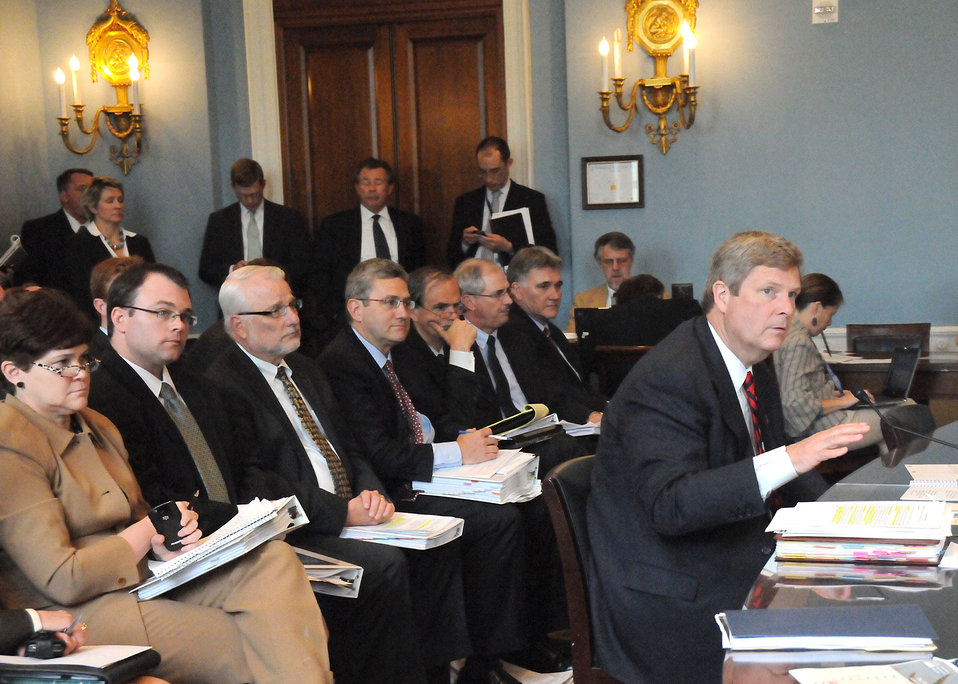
Agriculture Secretary Tom Vilsack testifies before the House Committee on Agriculture at the Longworth House Office Building, in Washington, D.C., on Wednesday, April 21, 2010. (Sitting behind Secretary Vilsack, L to R Assistant Secretary for Congressional Relations Krysta Harden, Farm Service Agency Administrator Jonathan Coppess, Natural Resources Conservation Service Chief Dave White, Deputy Director for Program Analysis in the Office of Budget and Program Analysis Chris Zehren, Office of General Counsel representative David Grahn, Rural Development Director of Alternative Energy Policy Bill Hagey, and Risk Management Agency Administrator William Murphy) USDA photo 10di1320-217